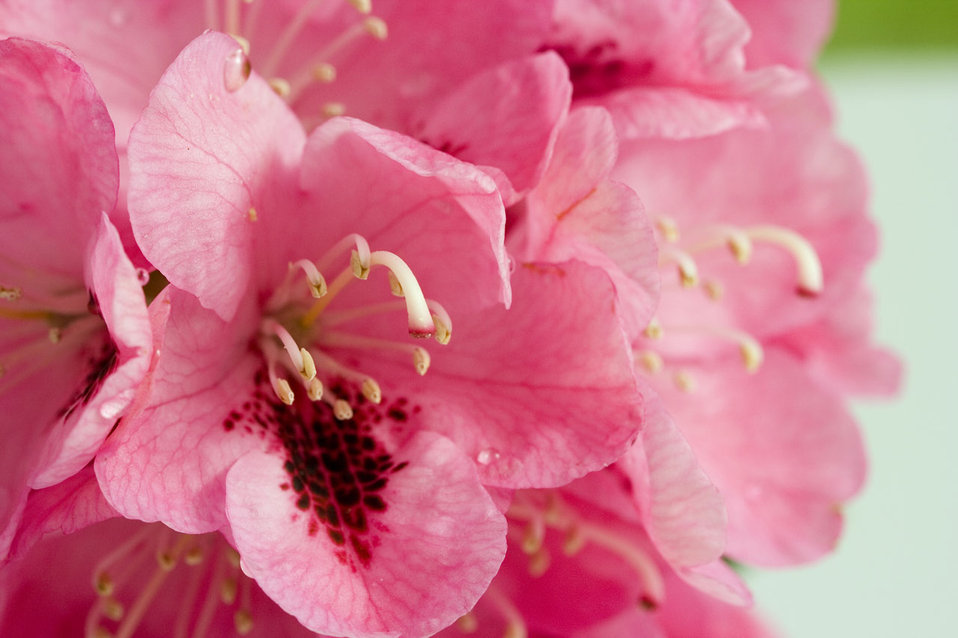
Pink rhododendron

Close up image of rhododendron flower.